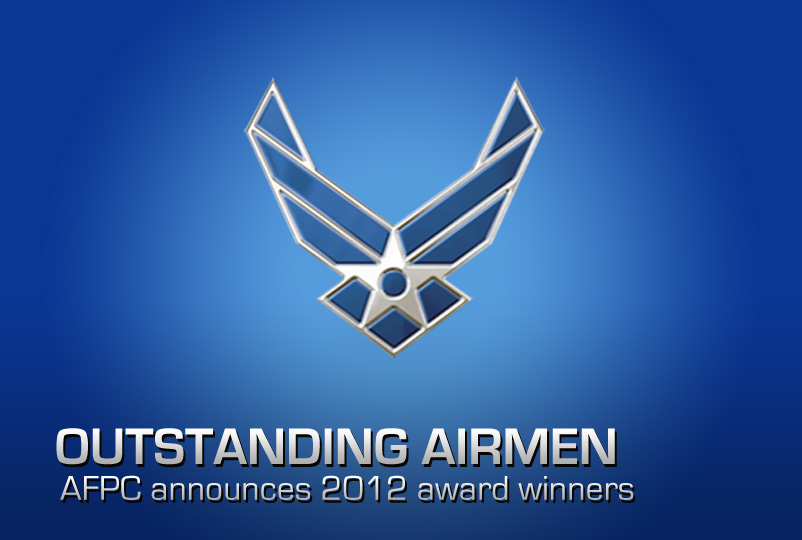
Outstanding Airmen selected

Air Force officials selected the service's top enlisted members, naming the 12 Outstanding Airmen of the Year for 2012.